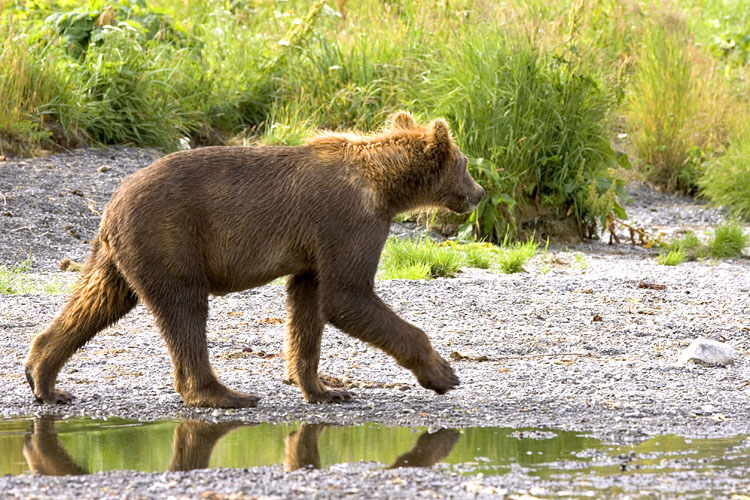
Wildlife of Kodiak Refuge